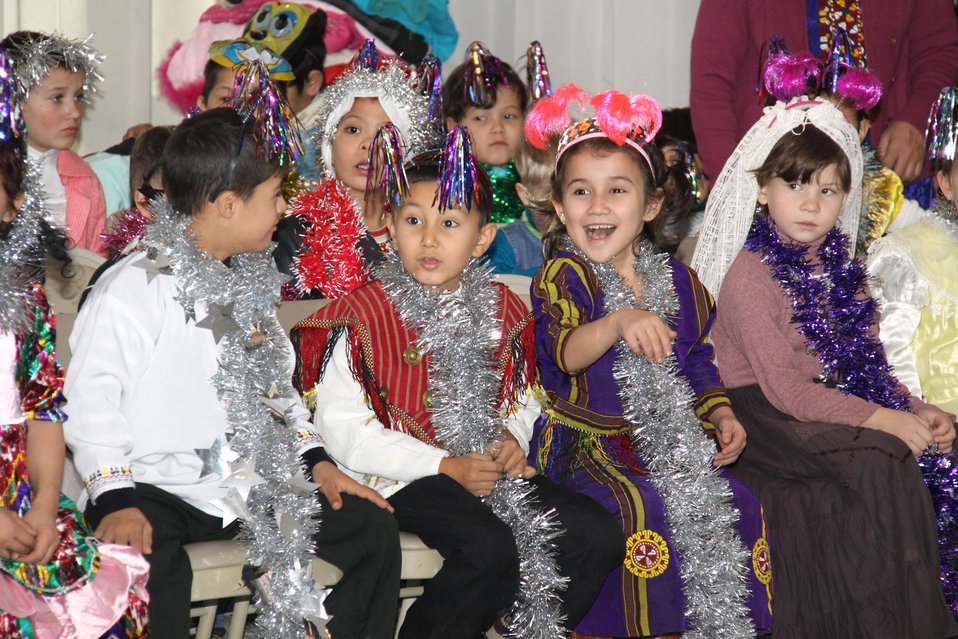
Turkmen children laugh while playing games. U.S. exchange alumni, together with the U.S. Embassy community and local NGOs, brought the holiday spirit to over 90 orphans, disabled children, and disadvantaged youth at the U.S. Embassy Ashgabat in Turkmenistan in December 2010.